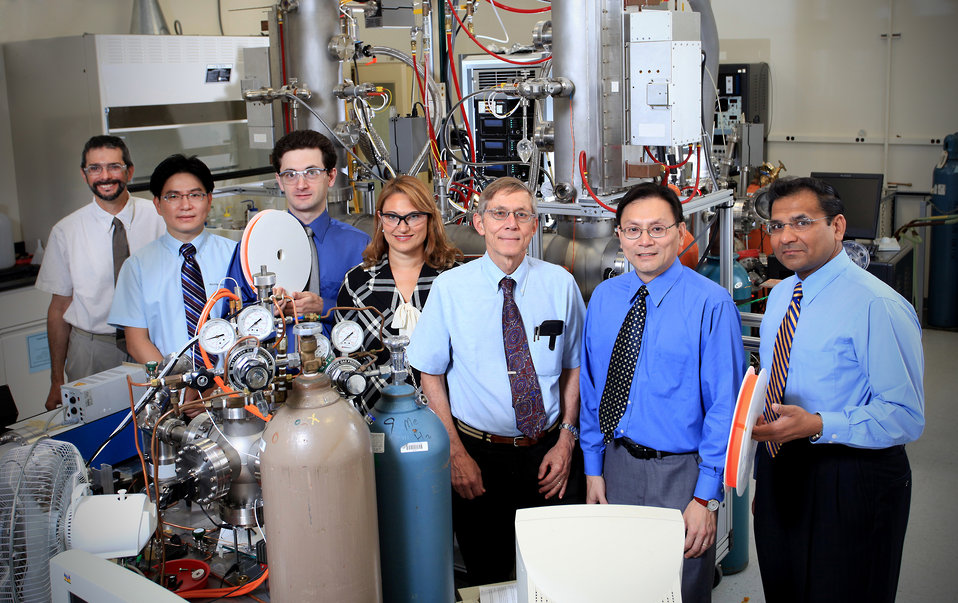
Methodology for estimating the life of power line conductor-connector systems operating at high temperatures (MELCOT)at Oak Ridge National Laboratory.

This technology predicts the service life of conductor-connect systems. The splices connecting the conductor lines are literally the weak links in the transmission systems. With this new method of investigating performance and integrity of the power line system, researchers can develop more durable and reliable systems for the electric power grid. Power grid operators can maintain power flow and prevent potential grid failures, and effectively reroute power distribution during emergency or natural disasters.